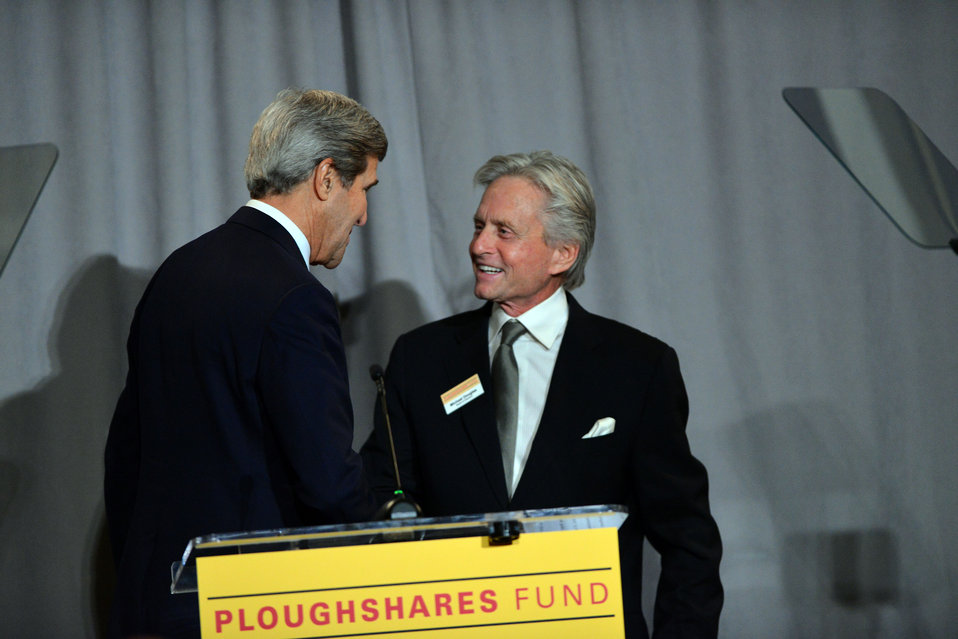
Secretary Kerry Shakes Hands With Michael Douglas

U.S. Secretary of State John Kerry shakes hands with Michael Douglas before delivering remarks at the Ploughshares Fund Gala at the U.S. Institute of Peace in Washington, D.C., on October 28, 2013. You can view the Secretary's remarks here: www.state.gov/secretary/remarks/2013/10/215951.htm.